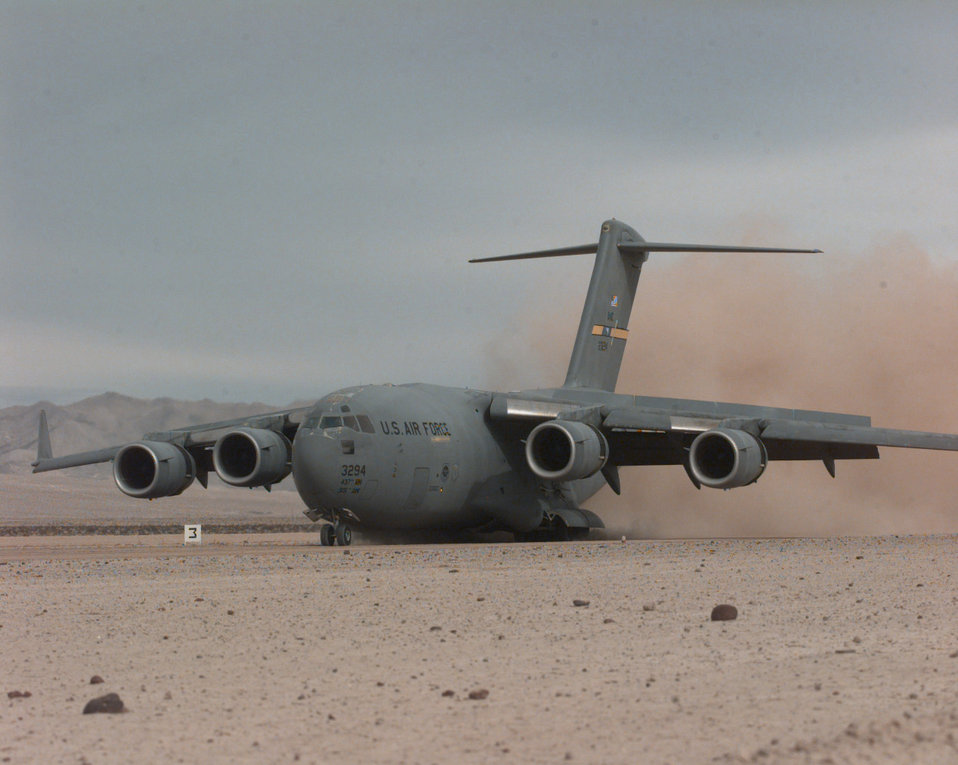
C-17

FILE PHOTO -- The C-17 Globemaster III is the newest, most flexible cargo aircraft to enter the airlift force. The C-17 is capable of rapid strategic delivery of troops and all types of cargo to main operating bases or directly to forward bases in the deployment area. The aircraft is also able to perform tactical airlift and airdrop missions when required. The inherent flexibility and performance characteristics of the C-17 force improve the ability of the total airlift system to fulfill the worldwide air mobility requirements of the United States.